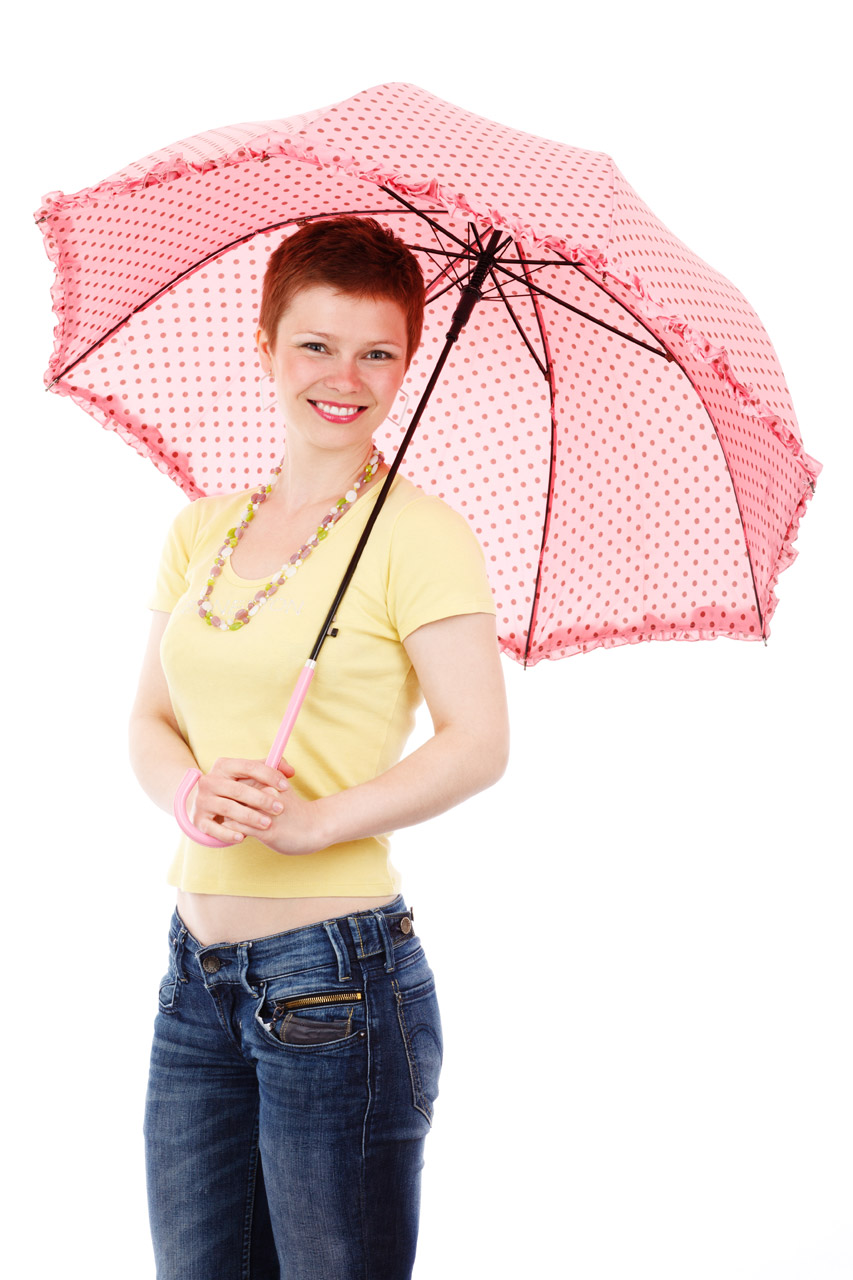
Girl with pink umbrella

Young woman smiling with pink umbrella isolated on white background.